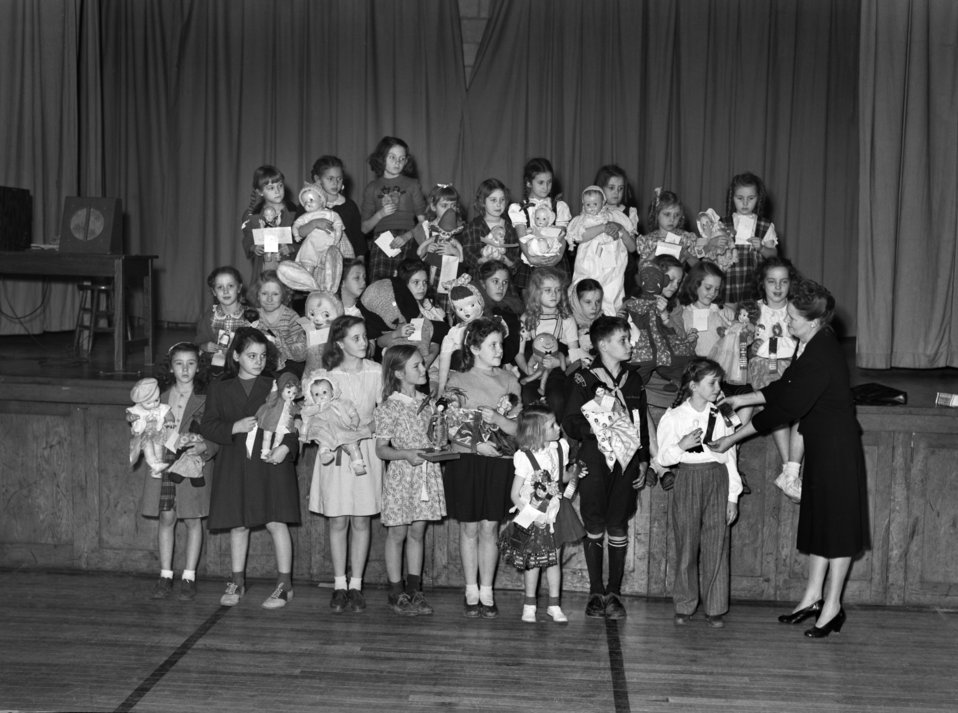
Doll Show Glennwood School Oak Ridge 1947

3275-8cpb DOE photo Ed Westcott Oak Ridge Tennessee